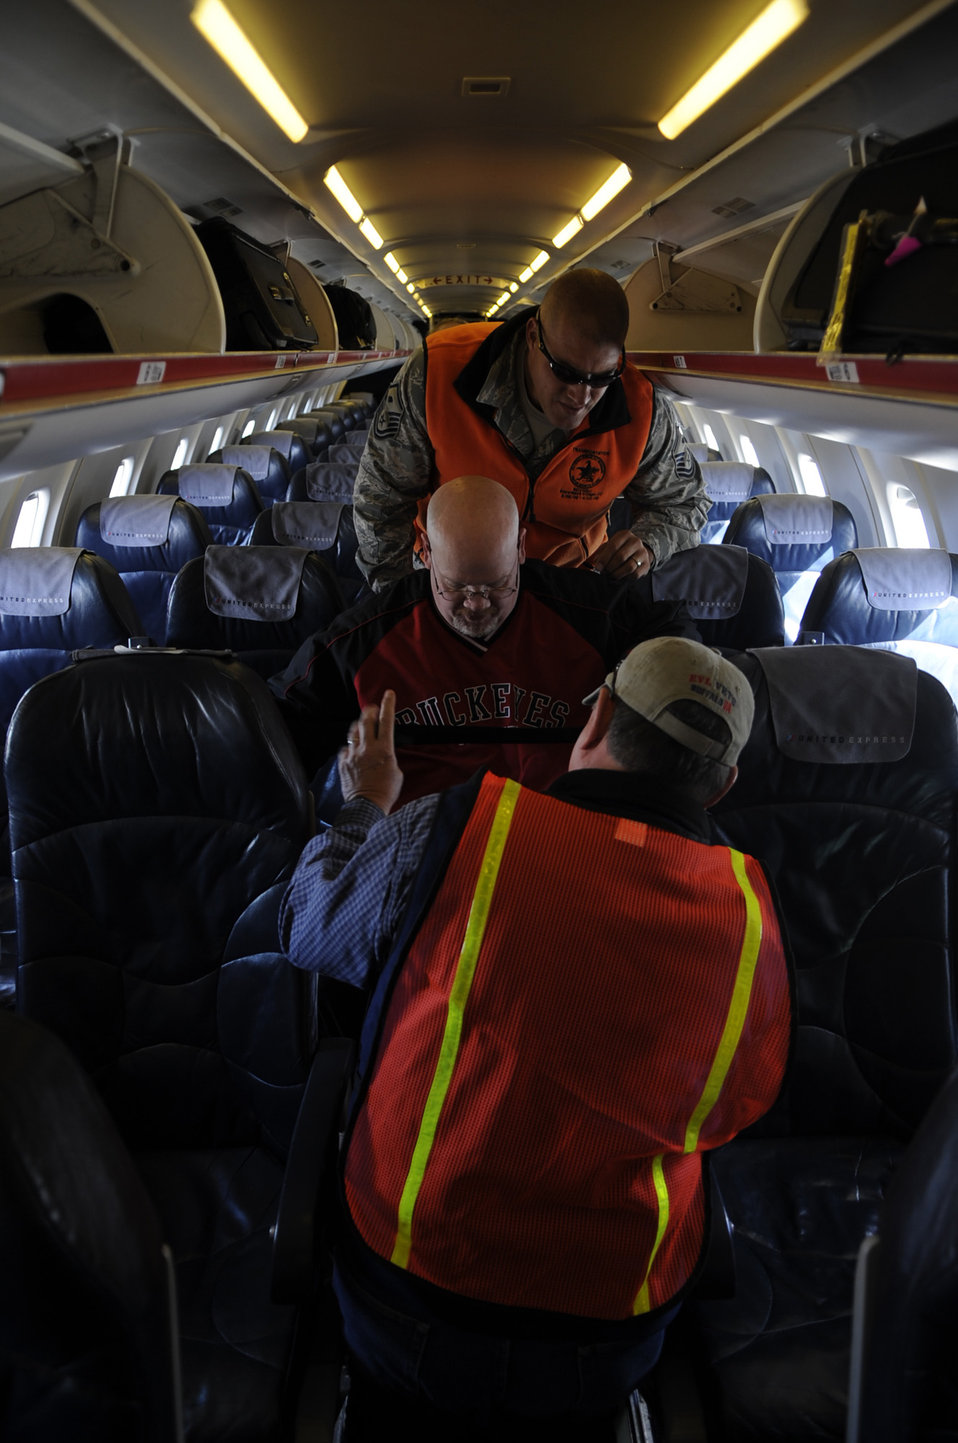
Luke Airmen assist disabled veterans at ski clinic

Steve Slater and Master Sgt. Scott Harris escort Michael Murphy off a United aircraft March 28 at the Aspen Airport, Colo. Mr. Slater is a ski instructor for the Disabled American Veteranss Winter Sports Clinic and is from Buffalo, N.Y. Sergeant Harris is the first sergeant for the 56th Security Forces Squadron at Luke Air Force Base, Ariz. Mr. Murphy is prior Air Force and his hometown is Dayton, Ohio. This is Mr. Murphy's first year attending the Disabled American Veteranss Winter Sports Clinic.